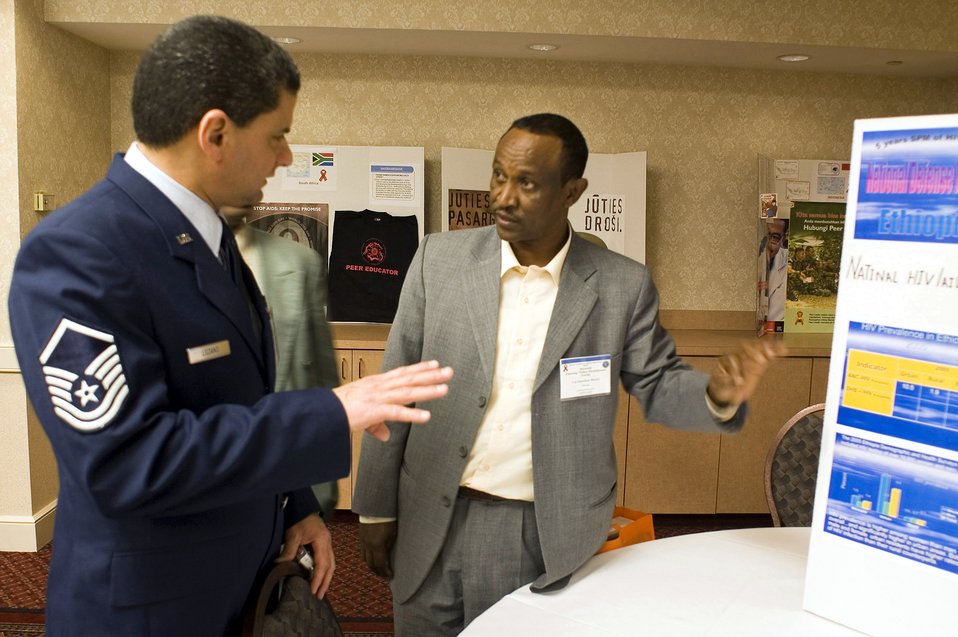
Military healthcare professionals join to combat global AIDS

Master Sgt. Roy Lozano, Noncommisioned Officer In Charge of the International Health Specialist program at Ramstien Air Force Base, Germany, and Col. Fantahun Messele, Head of the HIV/AIDS Office in the Defense, Health Service Department, Ethiopia, review Ethiopia AIDS/HIV statistics during the sixth annual international HIV/AIDS Conference in San Antonio, Texas, Dec. 5. The conference is designed to help senior military leaders from various nations develop and implement effective HIV/AIDS prevention strategies in their countries.